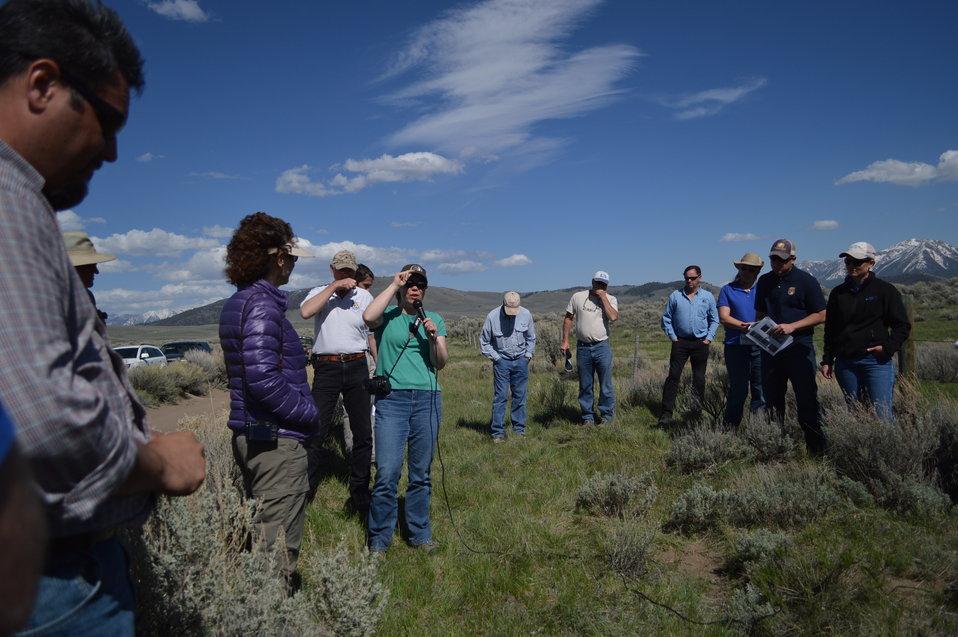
Regional Leadership Visit to Montana 2014